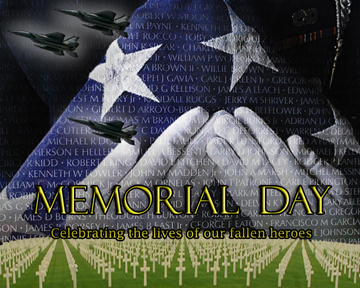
Airmen honor the fallen

Photo essay: Airmen honor the fallen